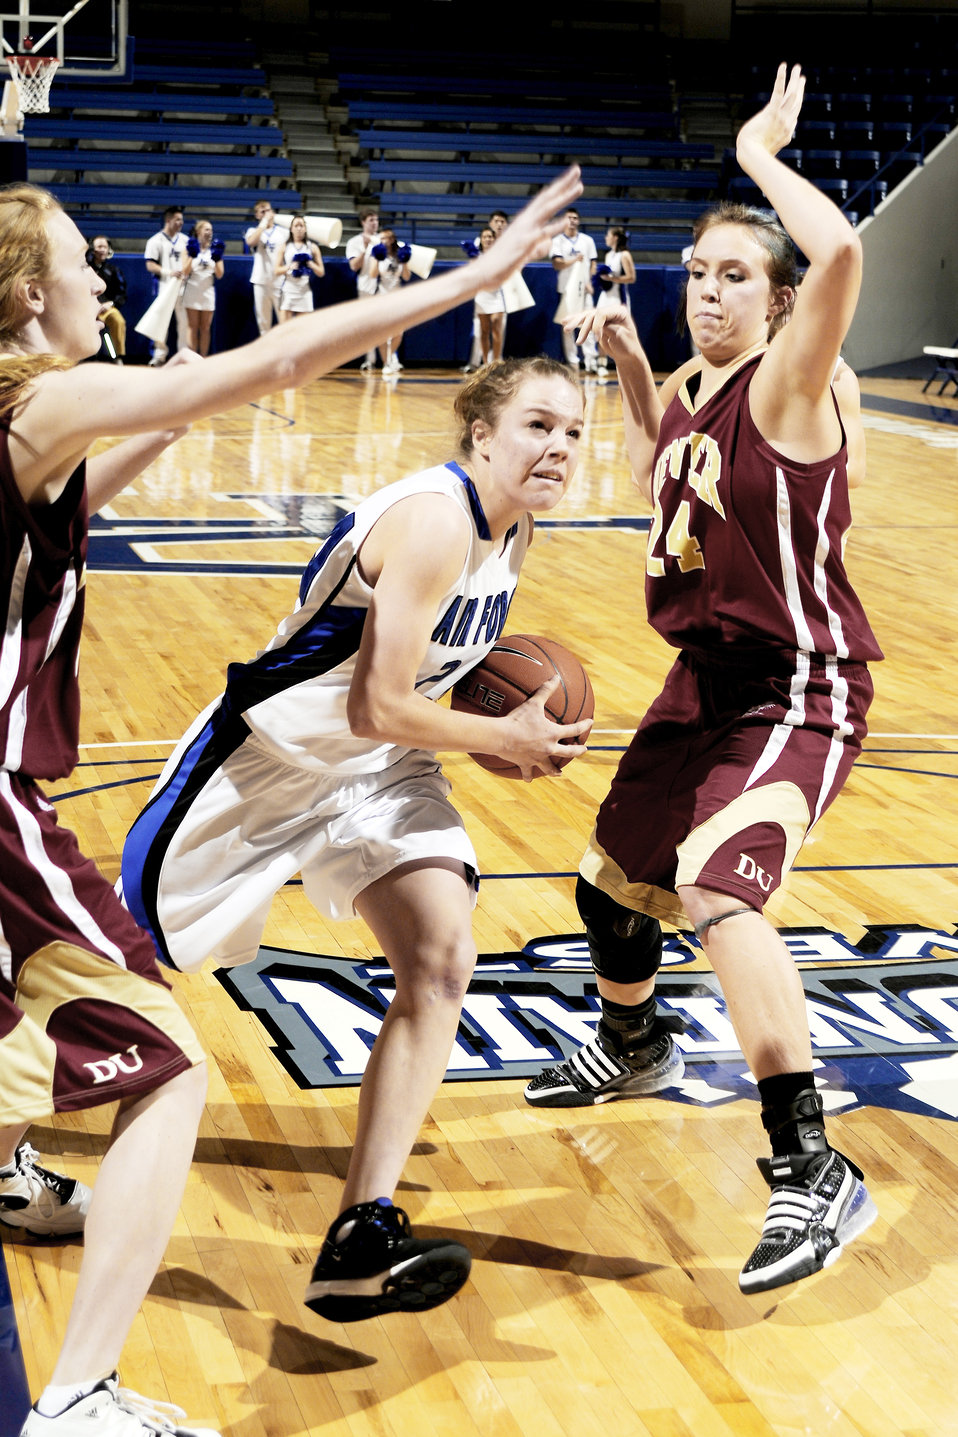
Air Force Academy

U.S. Air Force Academy, CO -- Freshman forward Katie Hilbig makes her way to the basket as the Falcons lost to the Denver Pioneers 64-62 at Clune Arena Dec 9. Air Force returns to action Saturday, Dec 19, hosting Bradley.